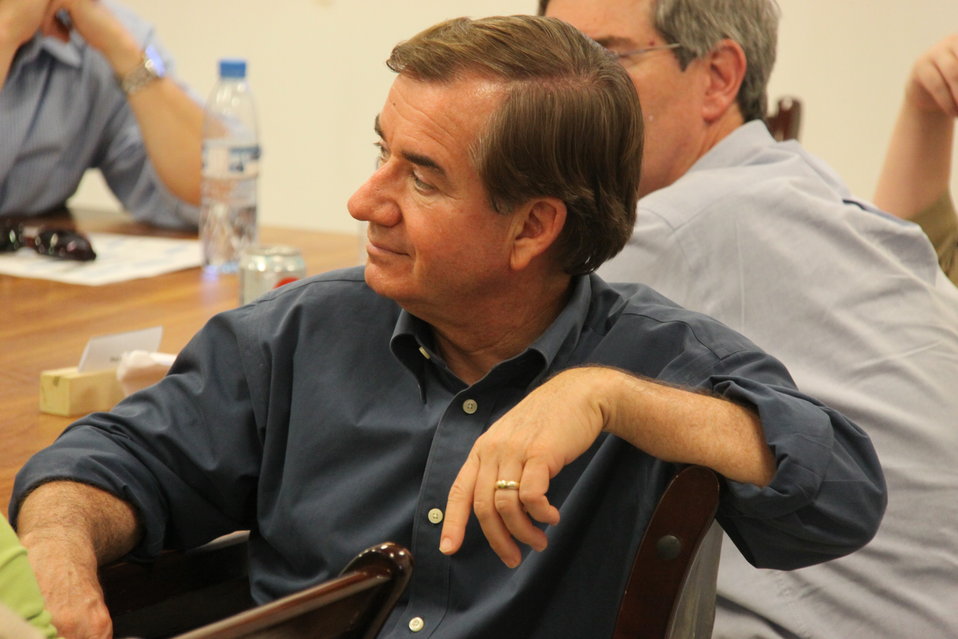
Meeting with Local Leaders in Kandahar